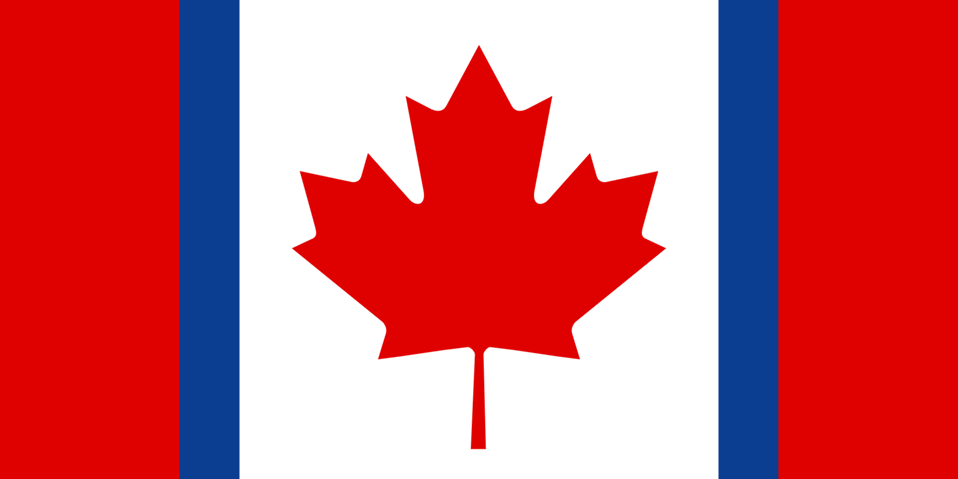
The en:Duality Flag, a Canadian flag that has been charged with two blue strips, standing for the Francophone population in Canada. Designed by Hank Gigandet in the 1990's; the blue strips are 25% of the total red section of the flag. See http://www.trcf.ca/ for more information. en:commons:Category:Flags of Canada